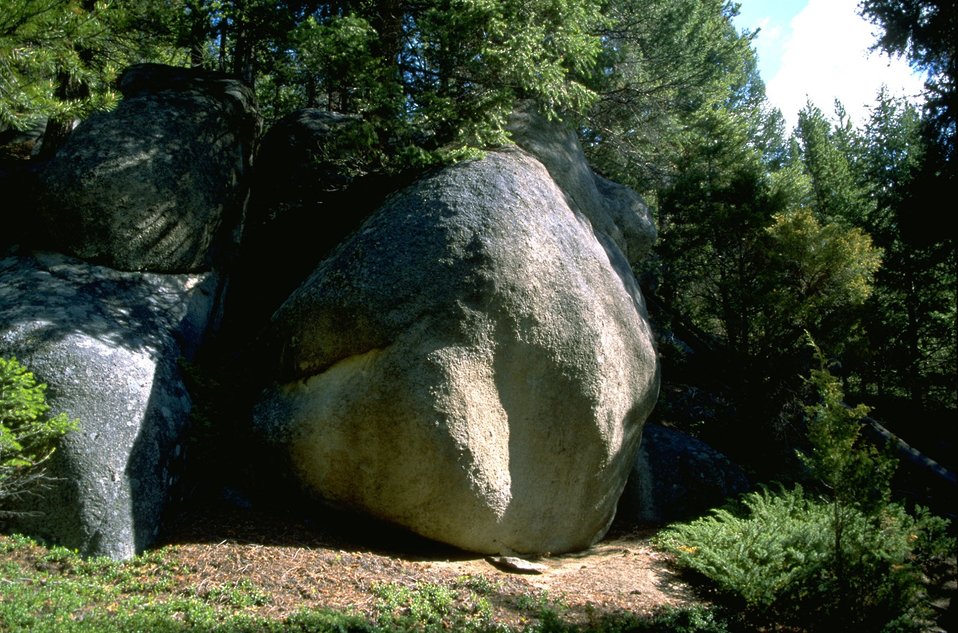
Huge rocks surrounded by fir trees